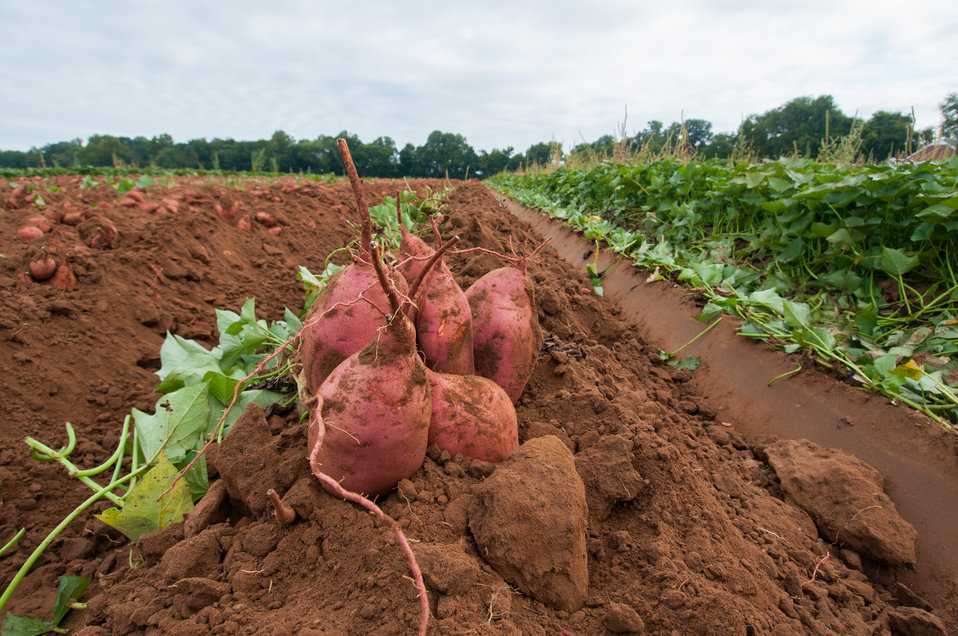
The sweet potatoes harvest begins by plowing them up at Kirby Farms in Mechanicsville, VA on Sept. 20, 2013. They devote 200 acres of the farm to eggplant, spinach, beets, tomato, jalapeno peppers, melons and a variety of greens. Soybeans and small grain are grown on the remaining 300 acres. The fertile Virginia soil and their management practices, allows Kirby Farms to double and triple crop fields with rotational crop selection. Wholesalers, who buy from this farm, sell the produce to major supermarkets in the Mid-Atlantic region, from North Carolina to Maryland. Restaurateurs in the local area prepare and serve their harvest to patrons in the Greater Richmond Region.